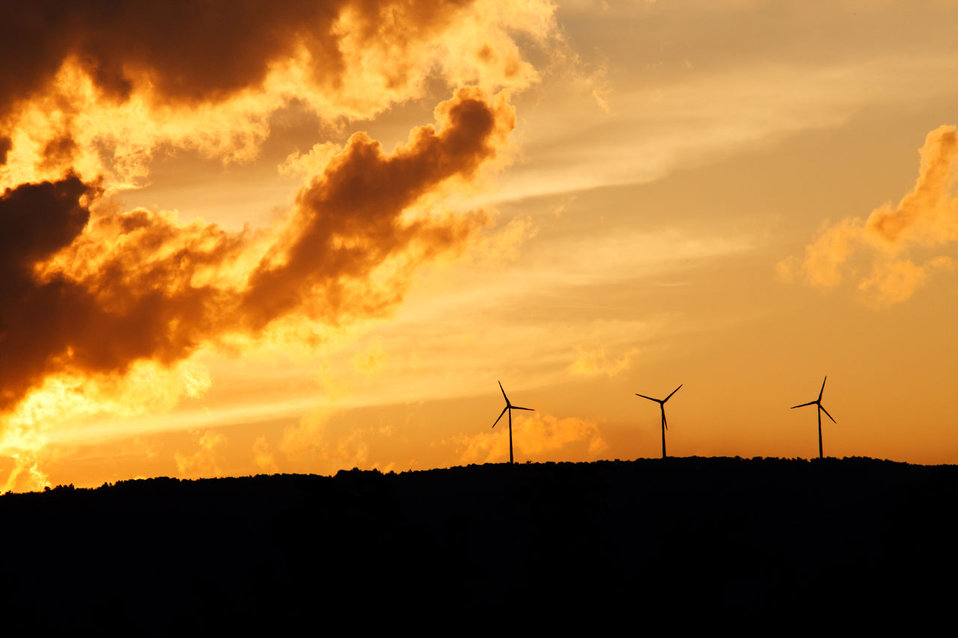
Wind turbines at sunset

Three wind turbines on horizon at sunset.